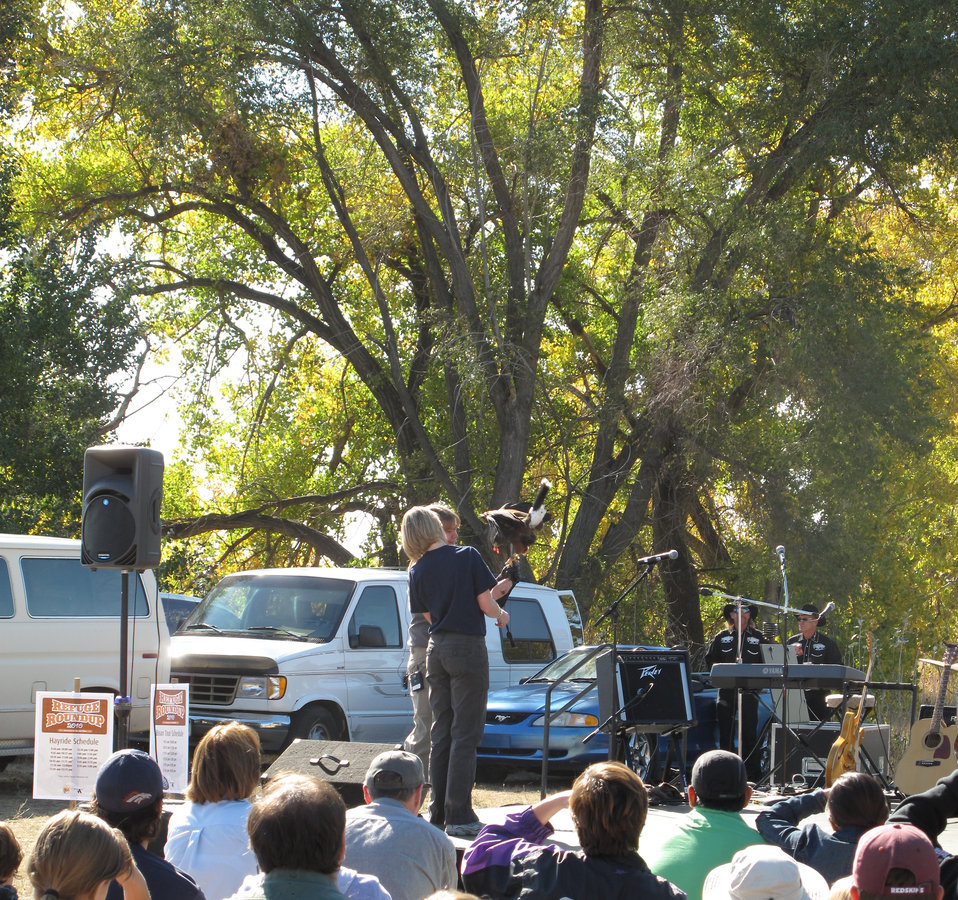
Hawkquest performance at the Refuge Round-up 2010 at the Rocky Mountain Arsenal.